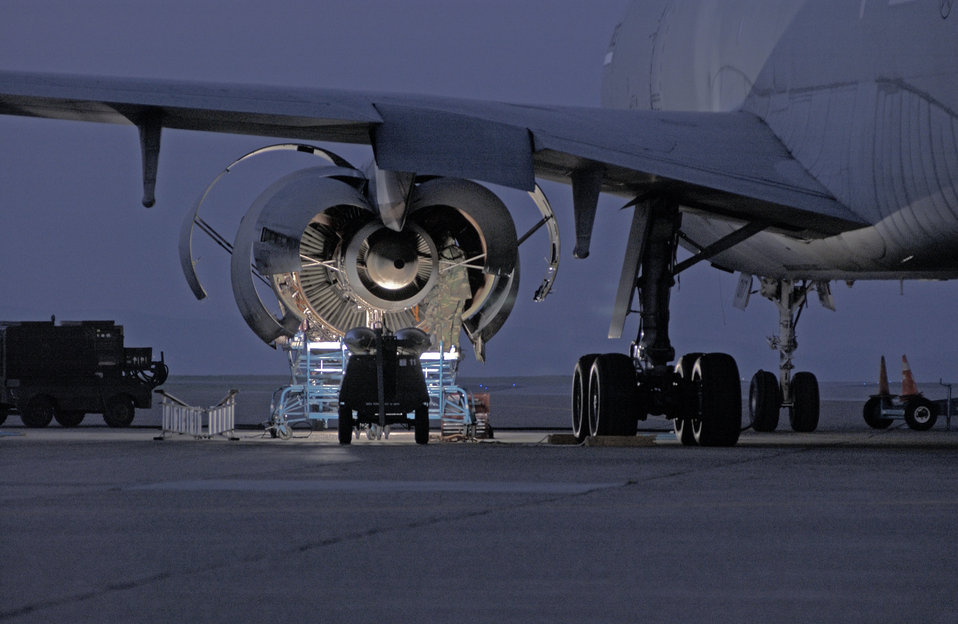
Extending the mission

TRAVIS AIR FORCE BASE, Calif. -- Airmen from the 660th Aircraft Maintenance Squadron here perform maintenance on one of the three engines on a KC-10A Extender. Each engine can produce 52,500 pounds of thrust. The KC-10 can carry up to 75 people and nearly 170,000 pounds of cargo for about 4,400 miles unrefueled.